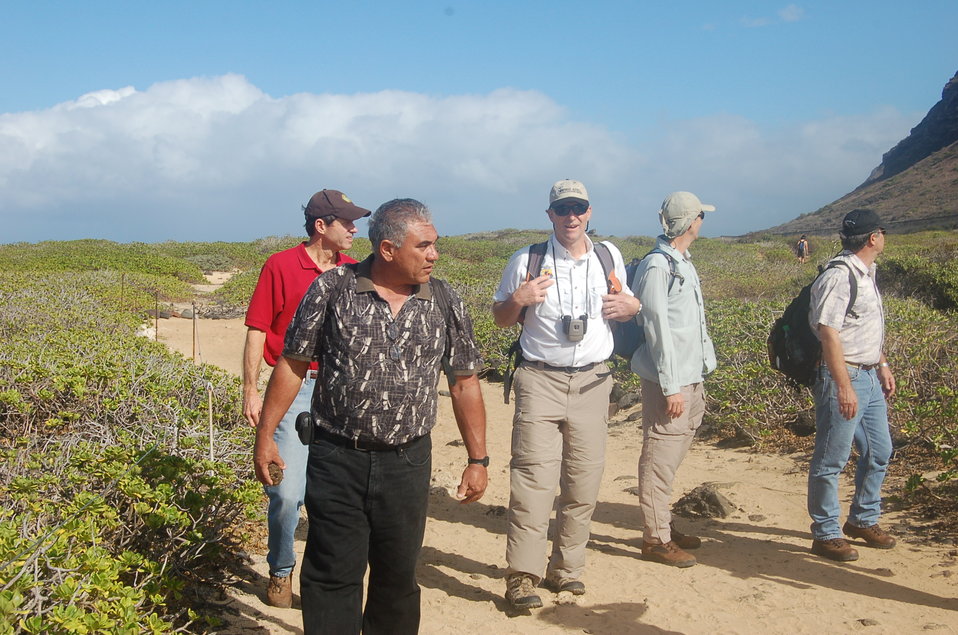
Dan Ashe tours Ka'ena Point State Park in Hawaii

Dan tours the park with conservation team.